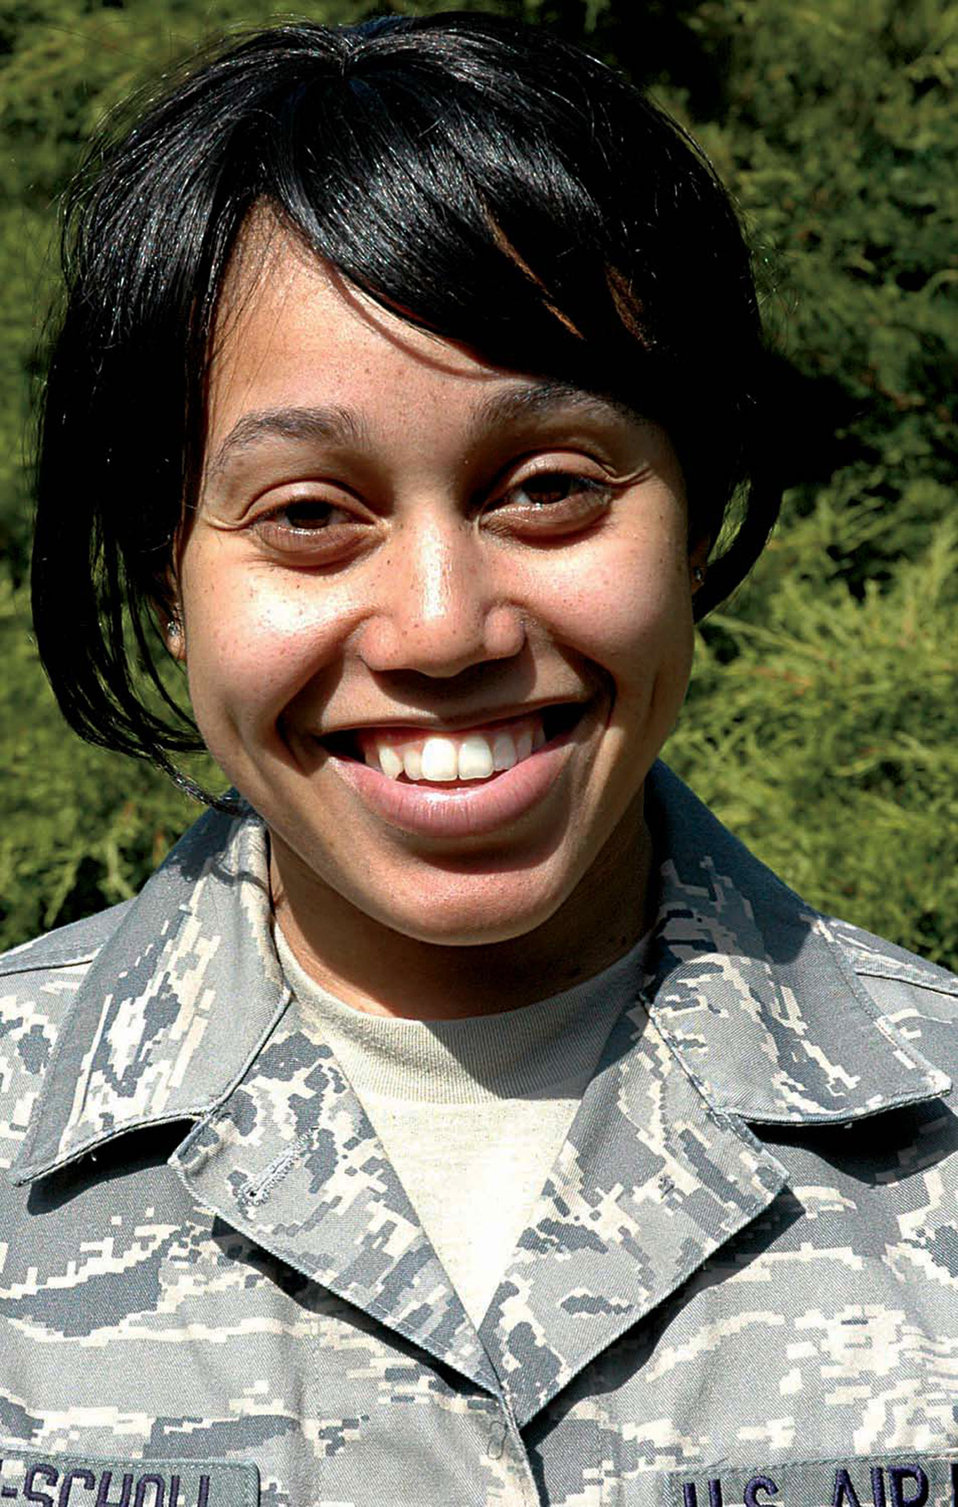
12 Outstanding Airmen of the Year named

Senior Airman Channel Bolton-Scholl, an aircraft maintenance technician with the 446th Maintenance Squadron at McChord AFB, Wash., played an important role in an Operation Deep Freeze deployment where she provided maintenance support for an aeromedical evacuation mission of an injured scientist. The Air Force Chief of Staff reviews the selections. The selections for the 2009 12 Outstanding Airmen of the Year were announced July 2 by Air Force officials at Randolph Air Force Base, Texas.